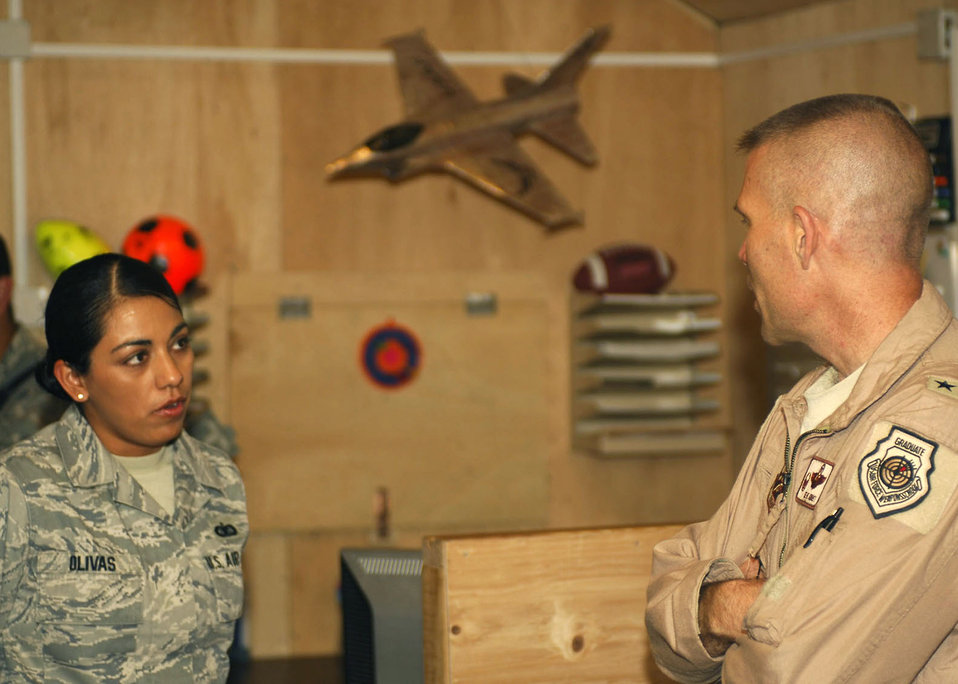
Airmen demonstrate their importance to Afghanistan, joint operations

Tech. Sgt. Gloria Olivas discusses work with Brig. Gen. Steve Kwast, 455th Air Expeditionary Wing commander, Aug. 30, 2009. The Airmen are assigned to FOB Lightning as joint expeditionary tasked Airmen who work day-to-day for Army commanders while they're also administratively assigned to Air Force commanders under the 755th Air Expeditionary Group at Bagram Airfield, Afghanistan. The JET Airmen are part of the Embedded Training Team, which mentors Afghan National Army Forces in many skills to include medical and public affairs. The visit by Air Force leaders was designed to check up on Airman morale and readiness, while also thanking the Airmen for their work in the remote part of Afghanistan. Sergeant Olivas is a personnel specialist here.